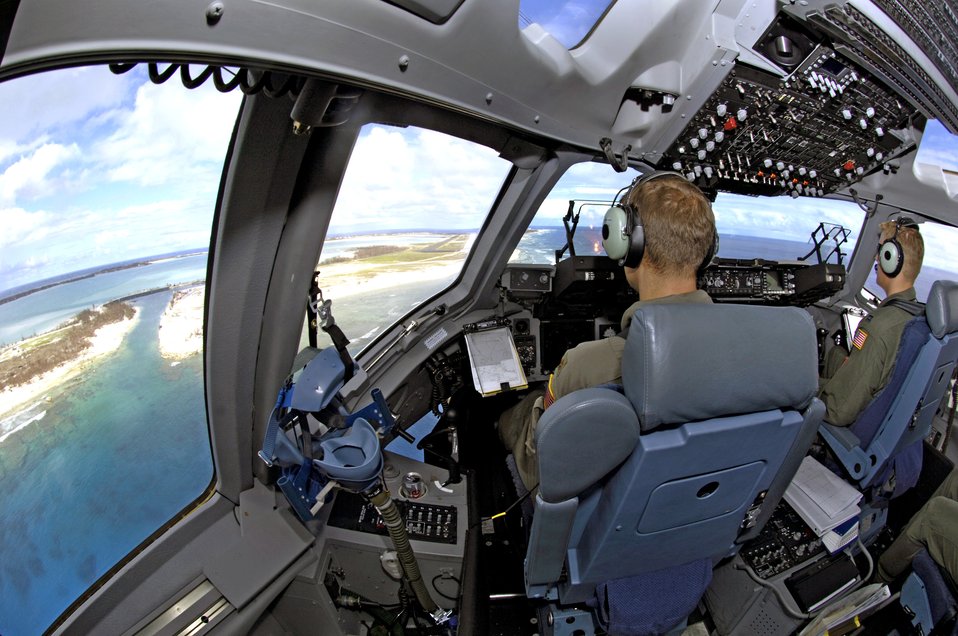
Teams fly to Wake Island to assess damage

Maj. Joseph Golovach and Capt. John Ramsey III bring their C-17 Globemaster III in for a landing on Wake Island Sept. 12. The C-17 brought a 53-person team to assess damage left by Super Typhoon Ioke after it struck the island Aug. 31. Both pilots are from the 535th Airlift Squadron at Hickam Air Force Base, Hawaii.